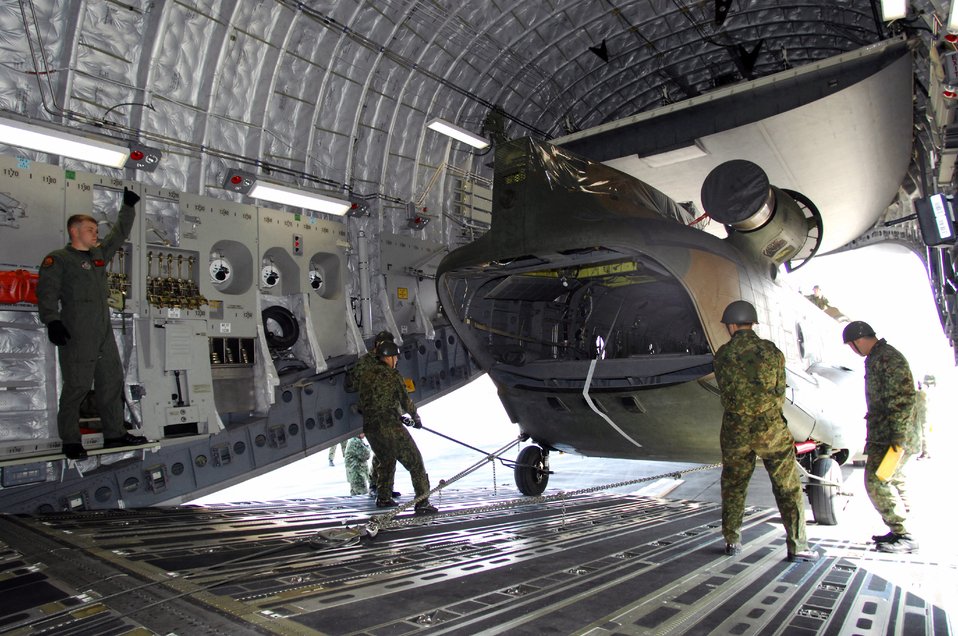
Airmen load Japanese helicopter into U.S. plane

Staff Sgt. Ryan Boehm (left) directs the loading of a Japan Ground Self Defense Force CH-47J Chinook onto a C-17 Globemaster III cargo plane Feb. 23 at Yokota Air Base, Japan. The demonstration was conducted during the Pacific Global Air Mobility Seminar held Feb. 22 and 23. The CH-47J is assigned to the 1st Helicopter Brigade at JGSDF Camp Kisarazu in Kisarazu City, Chiba Prefecture. Sergeant Boehm is a loadmaster assigned to the 535th Airlift Squadron at Hickam Air Force Base, Hawaii. The C-17 is also assigned to the 535th Airlift Squadron.